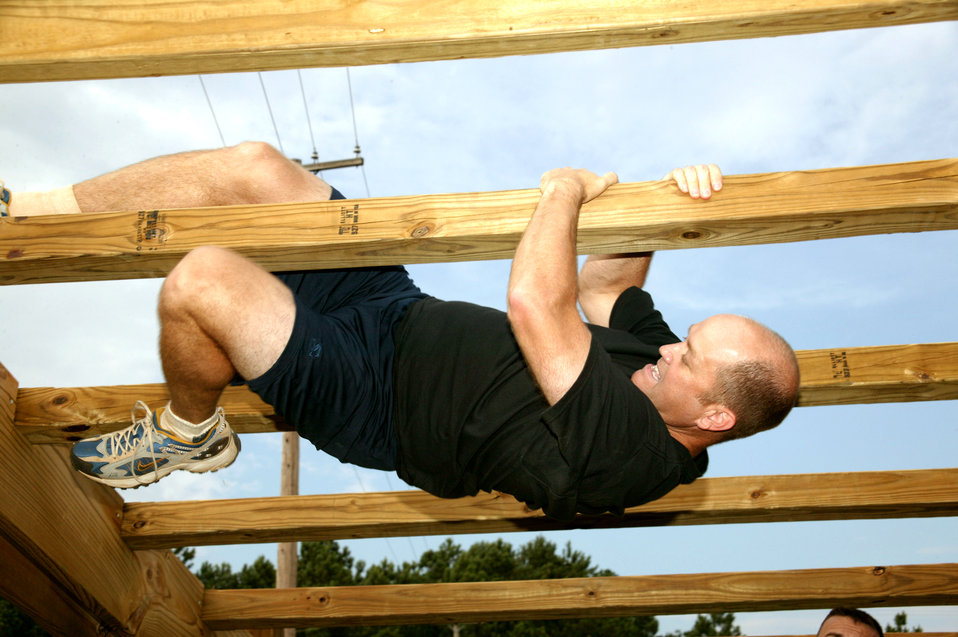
One obstacle at a time

SHAW AIR FORCE BASE, S.C. -- Maj. Mac Harris negotiates the weaver on a new obstacle course here July 5. The course was developed by the 28th Operational Weather Squadron to promote fitness and fun in a safe team atmosphere. More than 500 hours and $6,000 were spent on the self-help project.